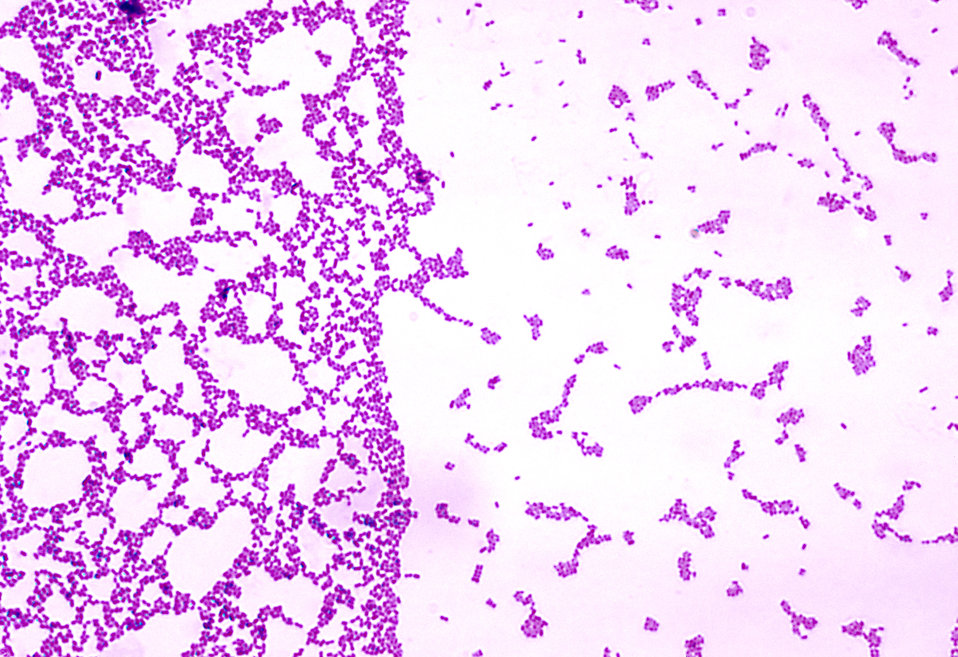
A photomicrograph of Streptococcus mutans bacteria using Gram stain technique.